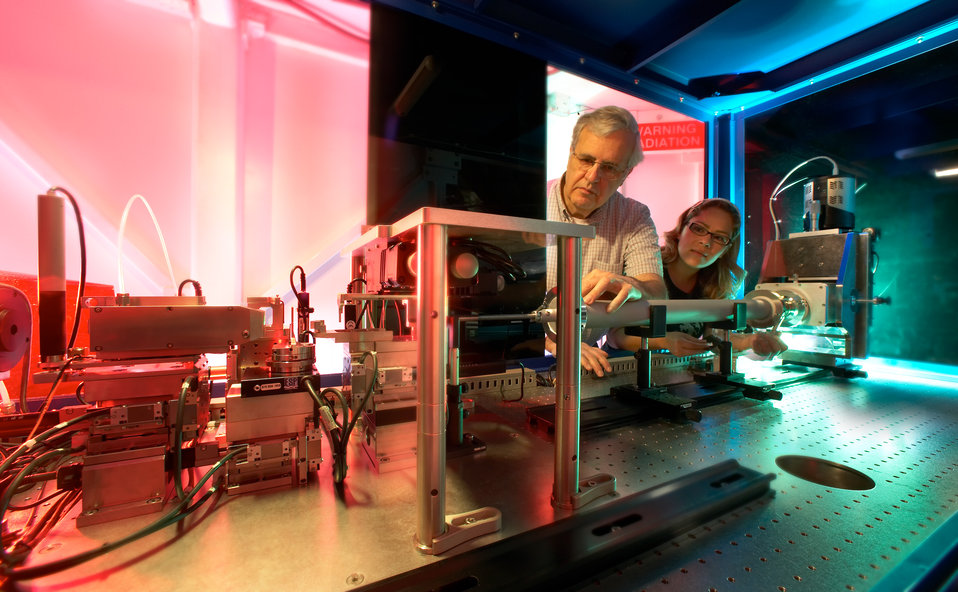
STANFORD SYNCHROTRON RADIATION LIGHTSOURCE'S SCIENTISTS INSPECTS SRL'S X-RAY MICROSCOPE AT BEAMLINE 6-2.

SSRL is a division of Stanford Linear Accelerator Laboratory (SLAC) devoted to research using synchrotron radiation, the electromagnetic radiation emitted when charged particles travel in curved paths. SSRL is funded by DOE as a national user facility.